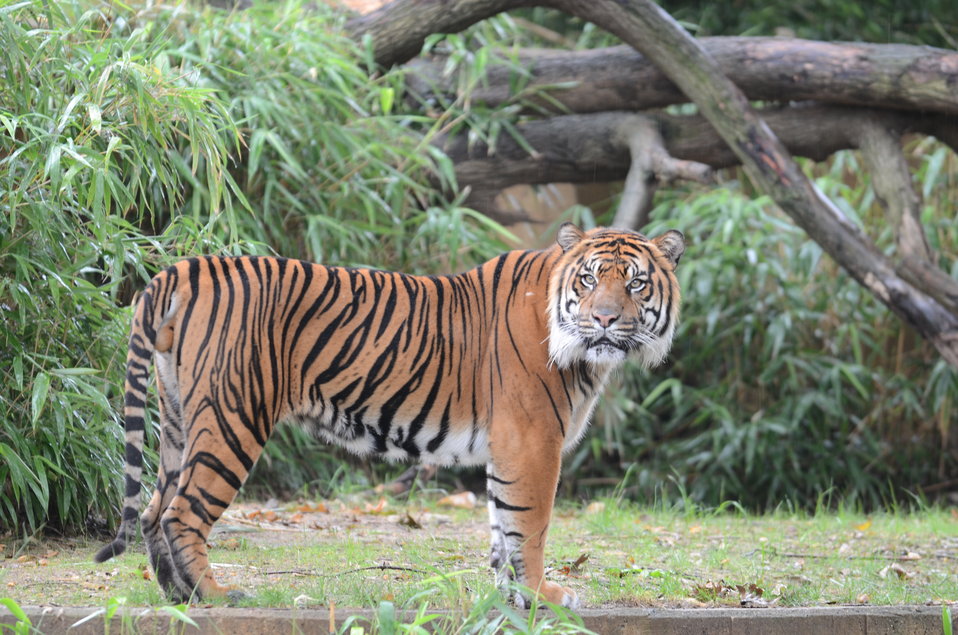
Tiger at National Zoo Frank Kohn USFWS